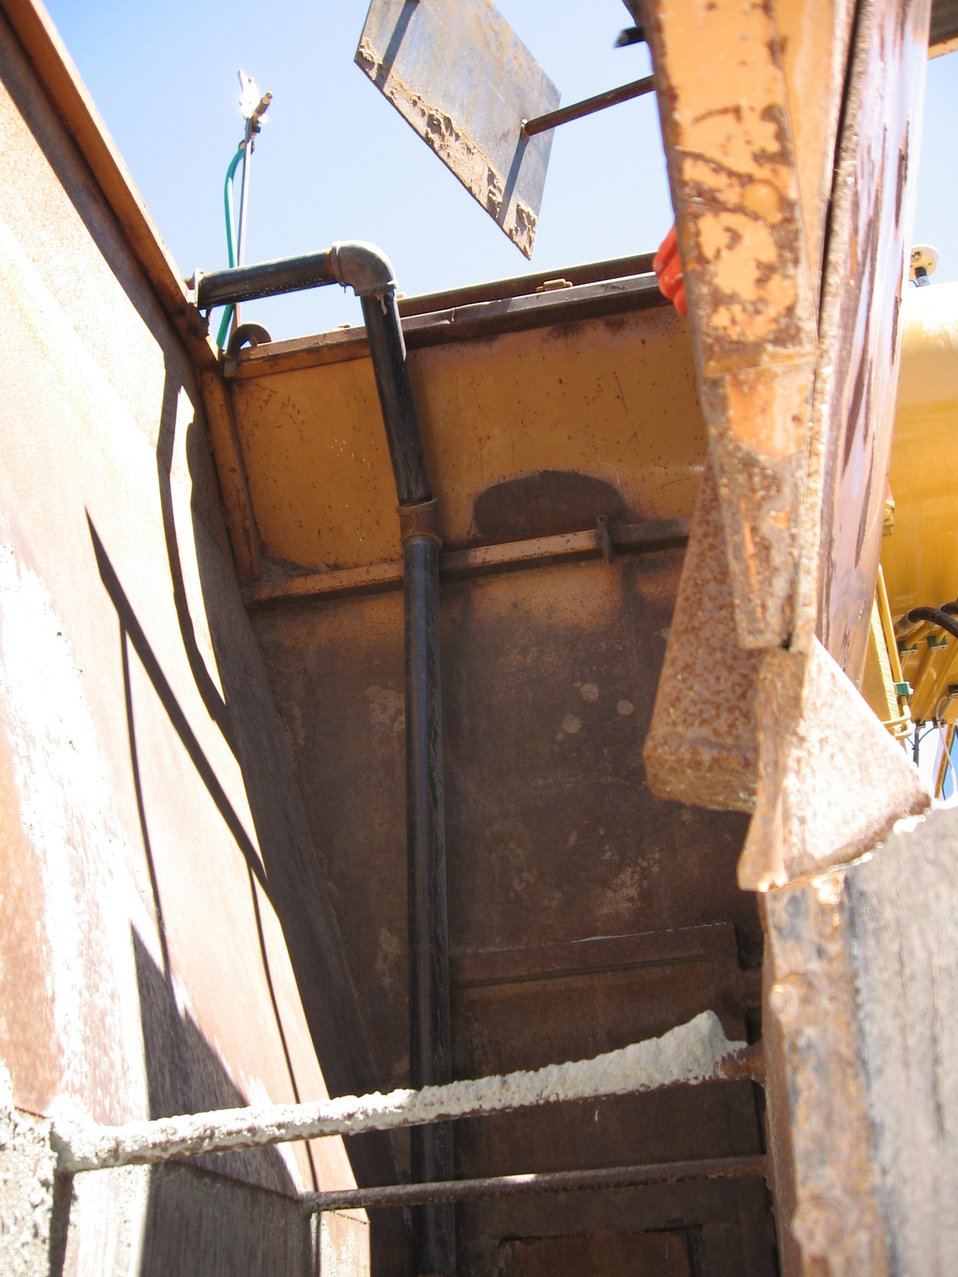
Recovery Act Funds Construction of Trench to Mitigate Groundwater Contamination